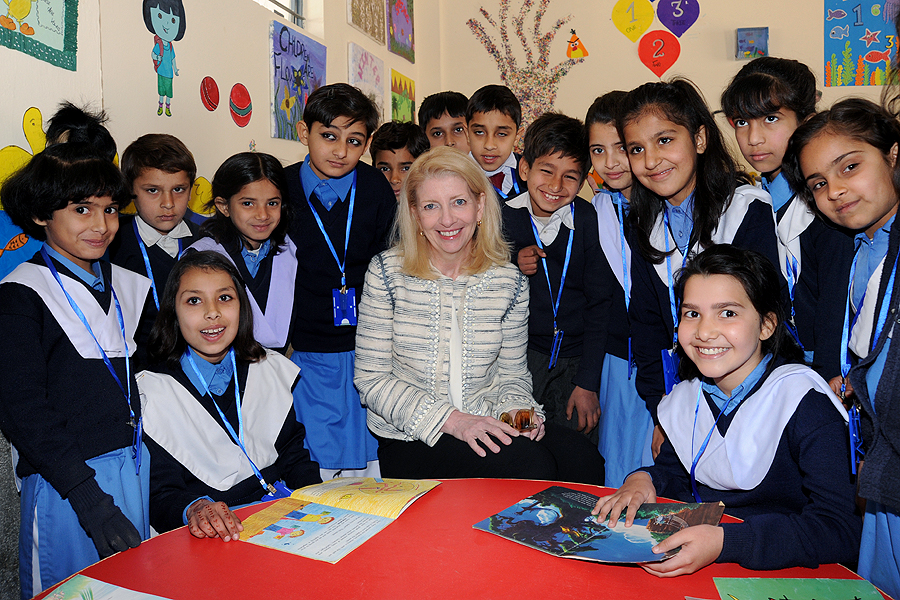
United States and Pakistan Launch the Pakistan Reading Project